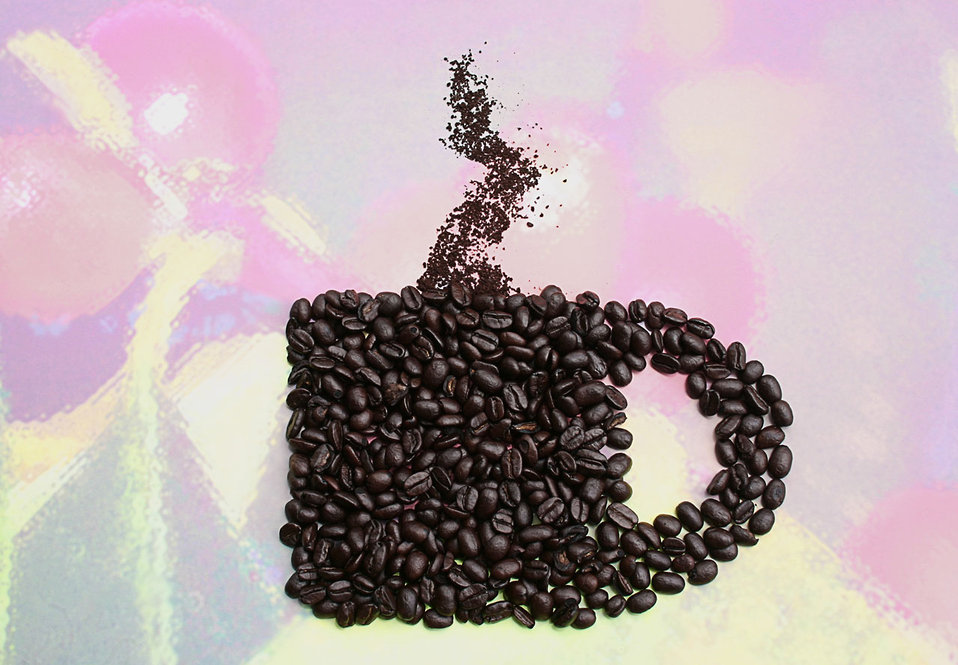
Coffee bean mug

Coffee beans arranged in shape of mug.